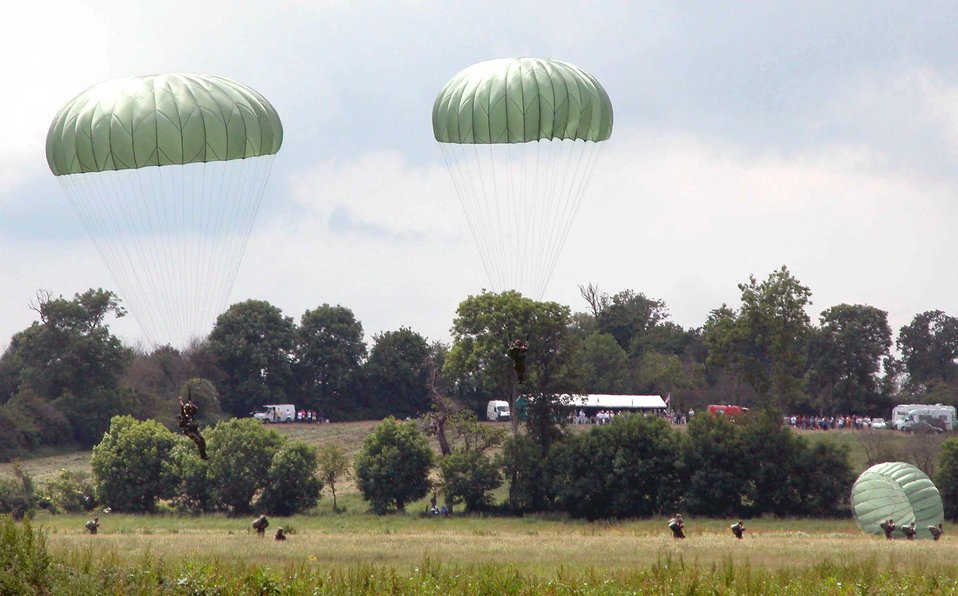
Paying tribute to airborne heroes

SAINTE-MERE-EGLISE, France -- Paratroopers land in a drop zone near here June 5 during a tribute to airborne Soldiers who died in the liberation of France in 1944.